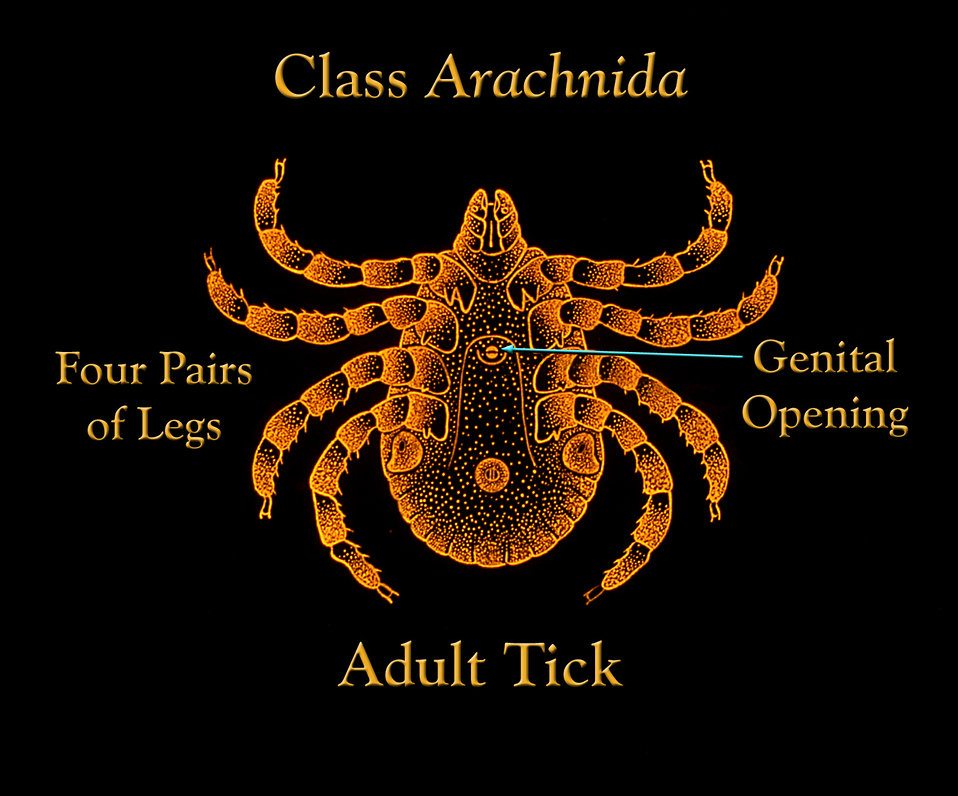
This illustration depicts the features of an adult tick, which at this stage does possess four pairs of legs, and a genital opening.